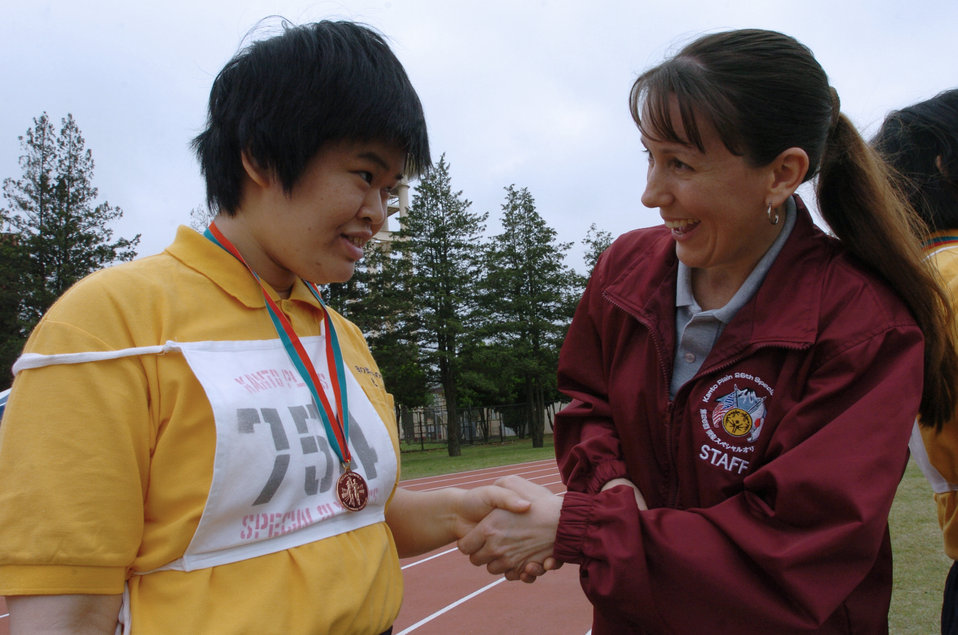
Special Olympics brings joy to Yokota volunteers

YOKOTA AIR BASE, Japan -- Tech. Sgt. Melissa Popejoy (right) shakes hands with Yuki Yano after she competed in a track and field event during the 26th Annual Kanto Plain Special Olympics here. More than 400 athletes from 20 Japanese schools competed in the two-day event May 7 and 8, which also included basketball, softball throw, swimming and bowling. Sergeant Popejoy is a cargo ramp specialist with the 730th Air Mobility Squadron.